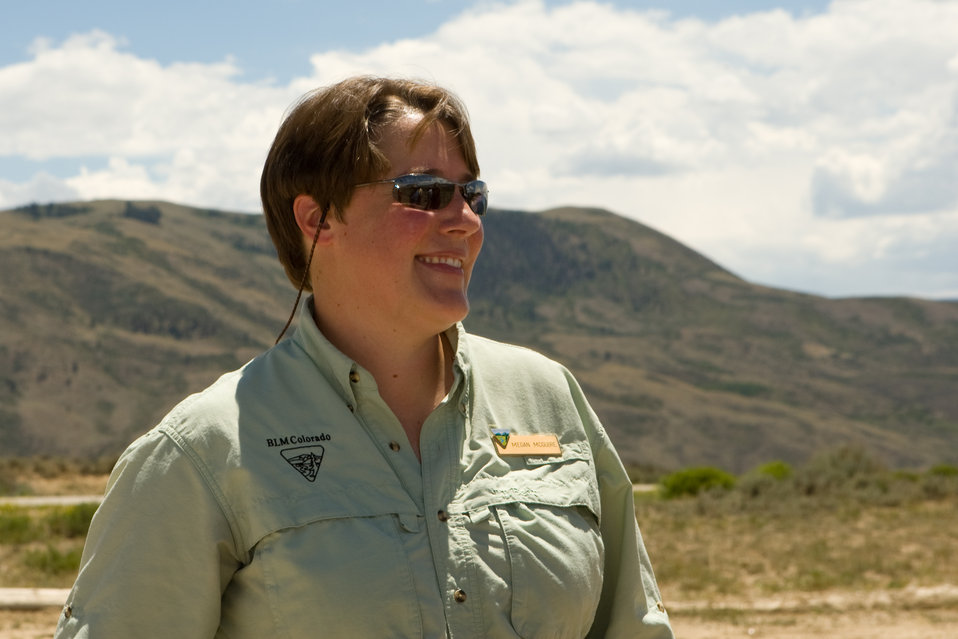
Colorado Rare Plant Conservation Initiative

The Colorado Rare Plant Conservation Initiative (RPCI) is a partnership of 23 statewide and regional agencies, private organizations, and academic institutions working to conserve 121 rare plants in Colorado. As part of these efforts the group developed the Colorado Rare Plant Conservation Strategy, developed Best Management Practices to reduce energy development impacts, addressed climate change, and developed focused strategies for the conservation of individual species at eight priority landscapes. The group has also worked to coordinate volunteer efforts for plant conservation across the state.